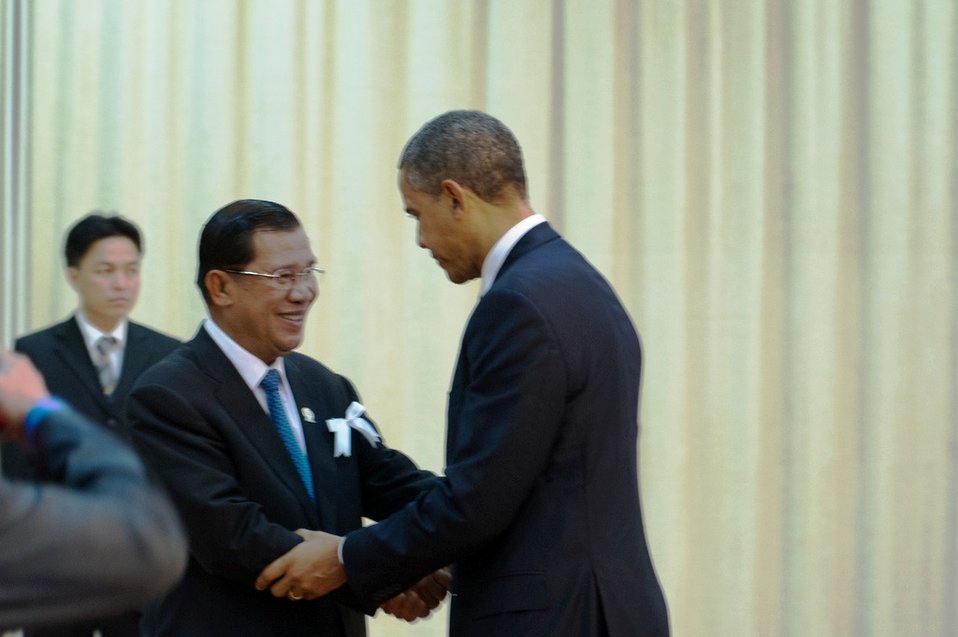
President Obama Is Greeted By Cambodian Prime Minister Hun Sen

U.S. President Barack Obama is greeted by Cambodian Prime Minister Hun Sen at the Peace Palace in Phnom Penh, Cambodia, November 19, 2012. President Obama is the first U.S. President to visit Cambodia.